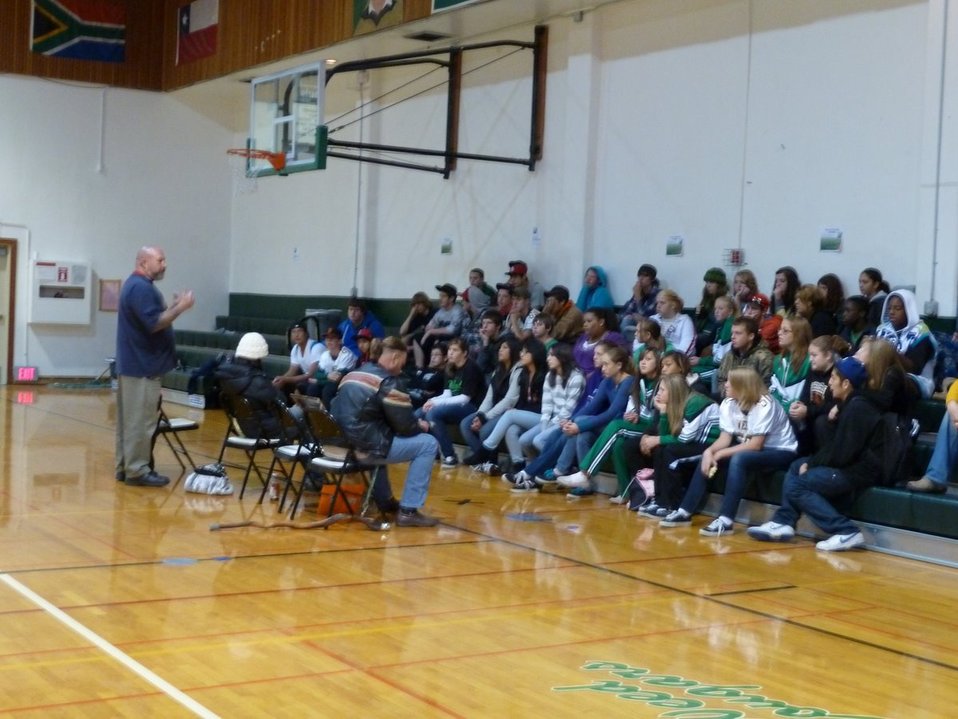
Siskiyou County, CA Drug Facts Week Photos

David and Leon answer questions from students at the school assembly in Siskiyou.